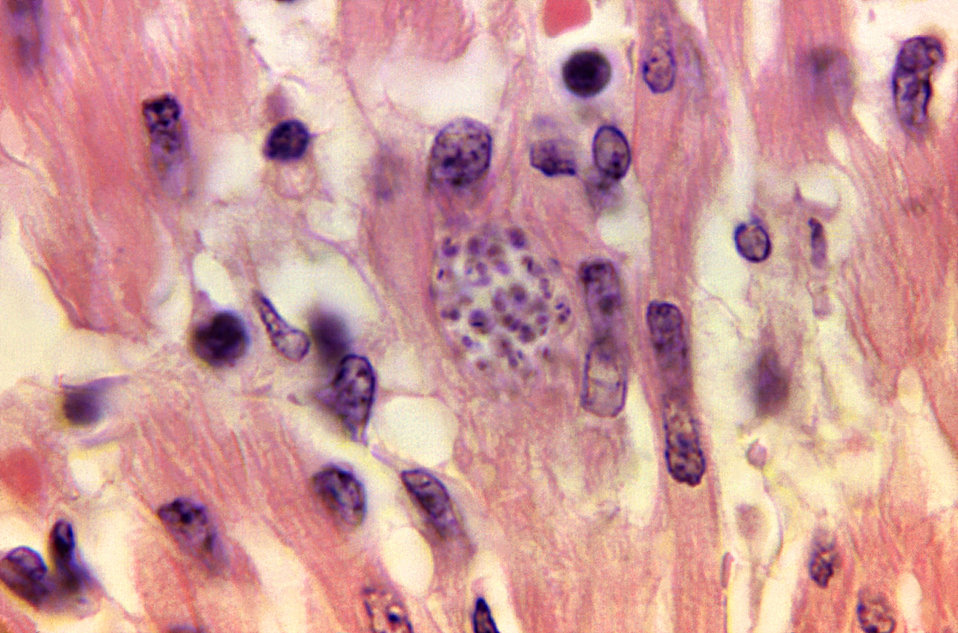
Trypanosoma cruzi in monkey heart. Histopathology.